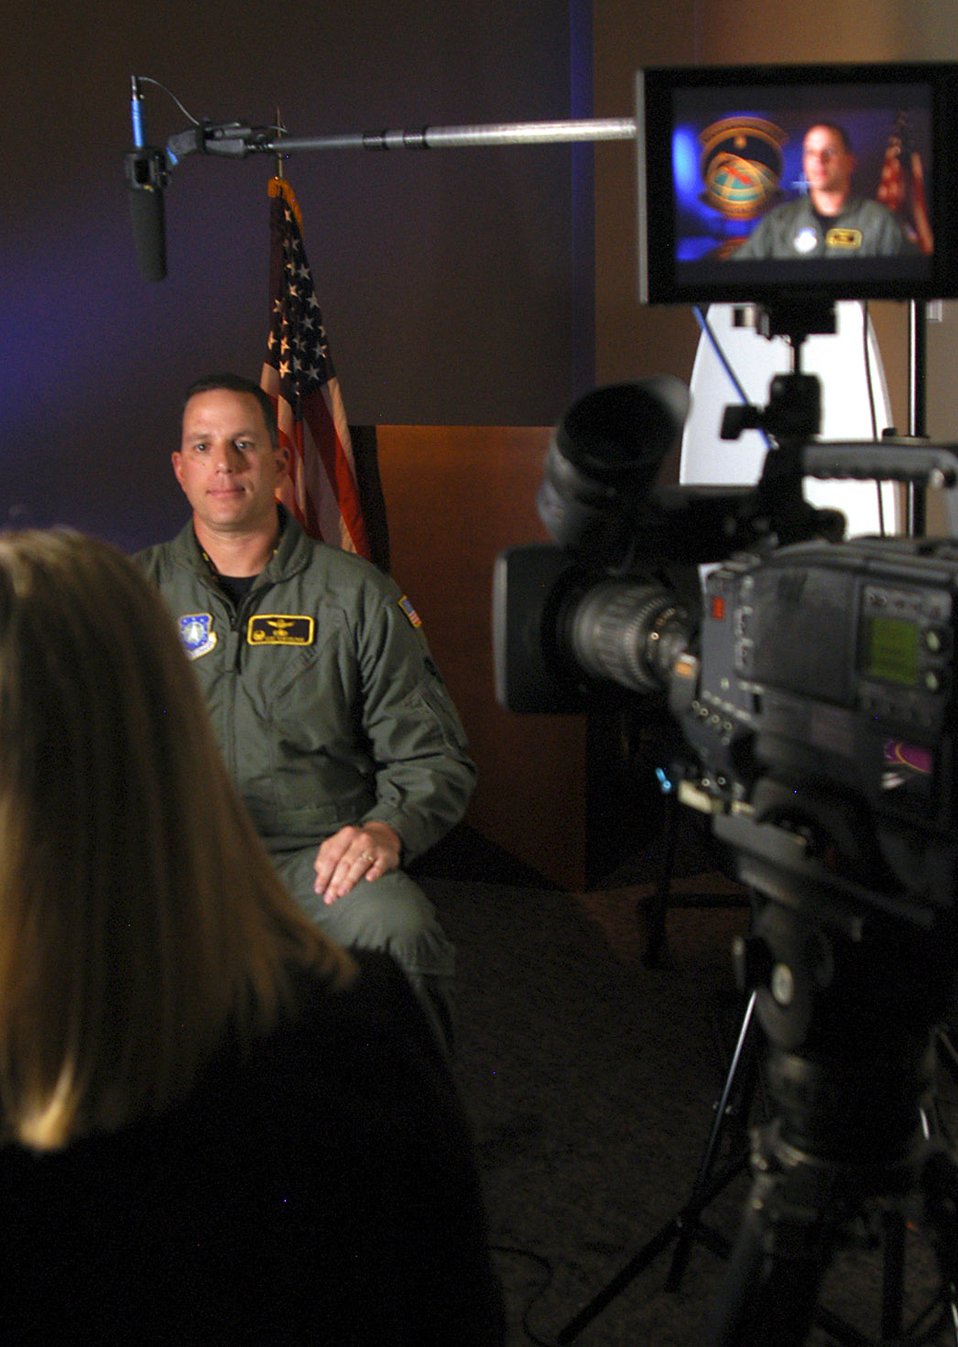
'Modern Marvels' film crew visits Schriever

Lt. Col. Kurt Kuntzelman discusses GPS with Kaylan Eggert of Actuality Productions for a segment on the History Channel's